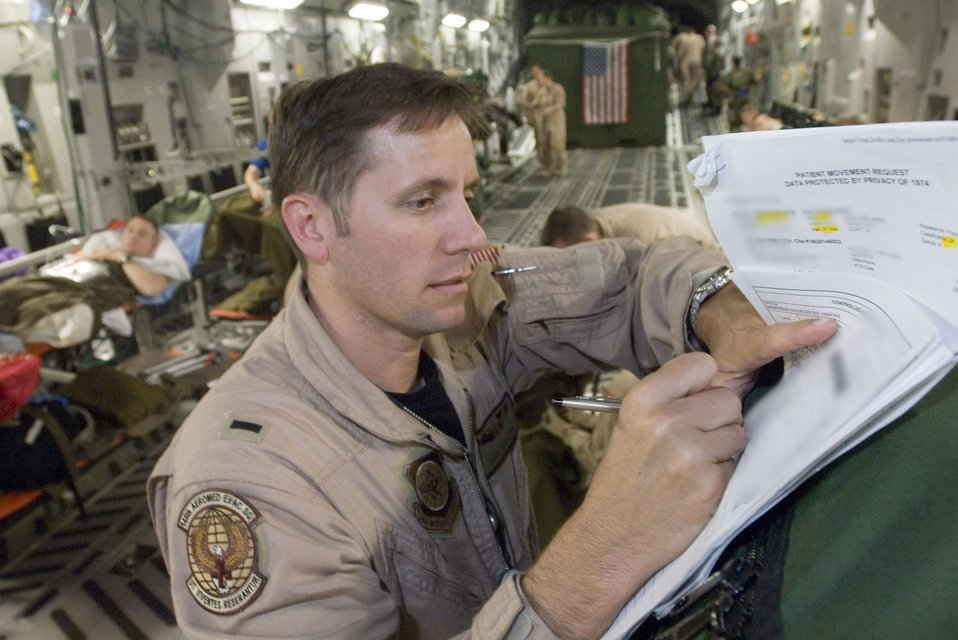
Flight nurse on medevac duty on Air Force birthday

First Lt. John Rinaldo annotates a patient's records after completing an aeromedical evacuation mission on a C-17 Globemaster III Sept. 18. Lieutenant Rinaldo is a flight nurse with the 791st Expeditionary Aeromedical Evacuation Squadron supporting operations Iraqi Freedom and Enduring Freedom.